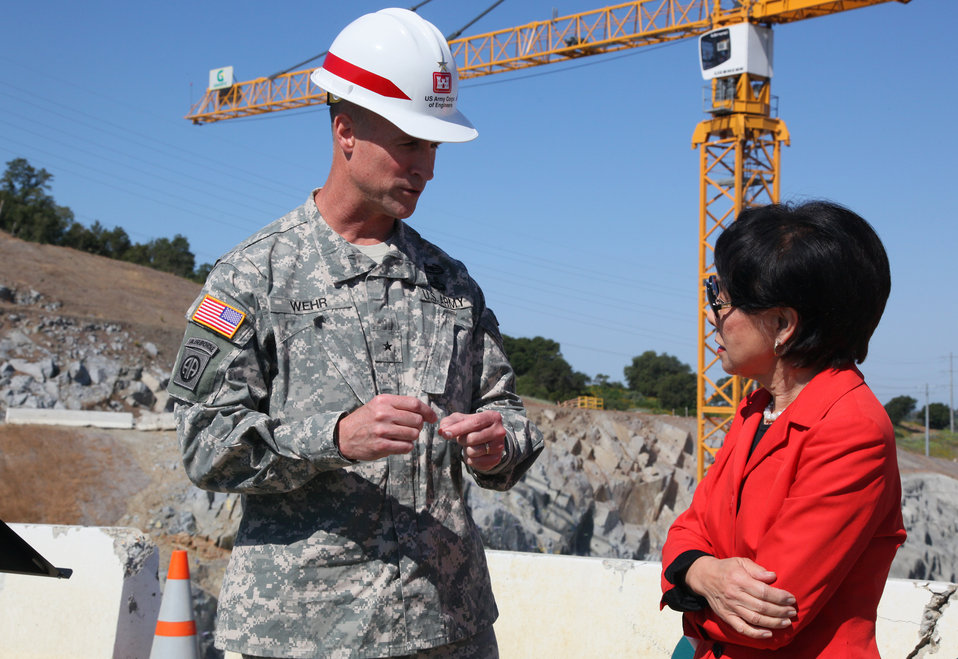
First concrete ceremony for Folsom Dam spillway

U.S. Army Corps of Engineers South Pacific Division commander, Brig. Gen. Mike Wehr (left), talks with U.S. Rep. Doris Matsui at a ceremony commemorating the first concrete placement for the auxiliary spillway control structure at Folsom Dam in Folsom, Calif., May 24, 2012. The Corps, together with the U.S. Bureau of Reclamation and state and local partners, is building the spillway to reduce flood risk throughout the Sacramento region.